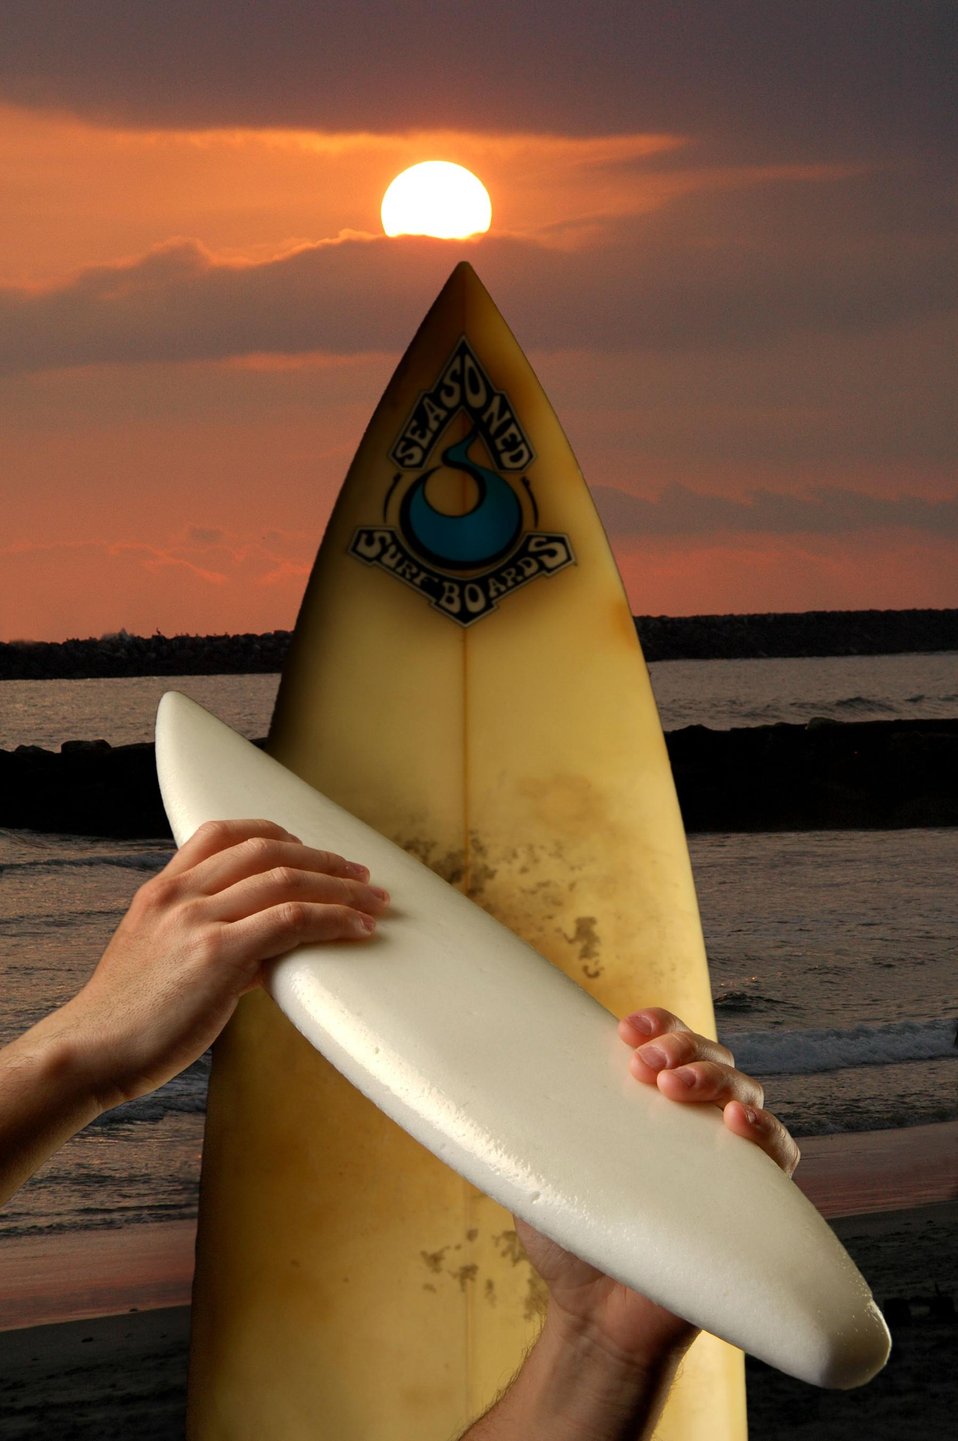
PICTURED IS A SURFBOARD BLANK THAT IS MADE FROM TUFFOAM AT SANDIA NATIONAL LABORATORY.

THE TUFFOAM WAS ORIGINALLY INVENTED BY SANDIA SCIENTISTS FOR THE NATIONAL NUCLEAR SECURITY ADMINISTRATION AS AN ENCAPSULATED MATERIAL TO PROTECT SENSITIVE ELECTRONIC AND MECHANICAL STRUCTURES FROM HARSH WEAPONS ENVIRONMENTS. IT IS A LOW-DENSITY, ENVIRONMENTALLY FRIENDLY FOAM. THE MATERIAL CAN BE USED FOR THERMAL AND ELECTRICAL INSULATION. SOME COMMON USES ARE BUMPERS AND AIRPLANE WINGS. THE TUFFOAM IS COMMERCIALLY AVAILABLE.